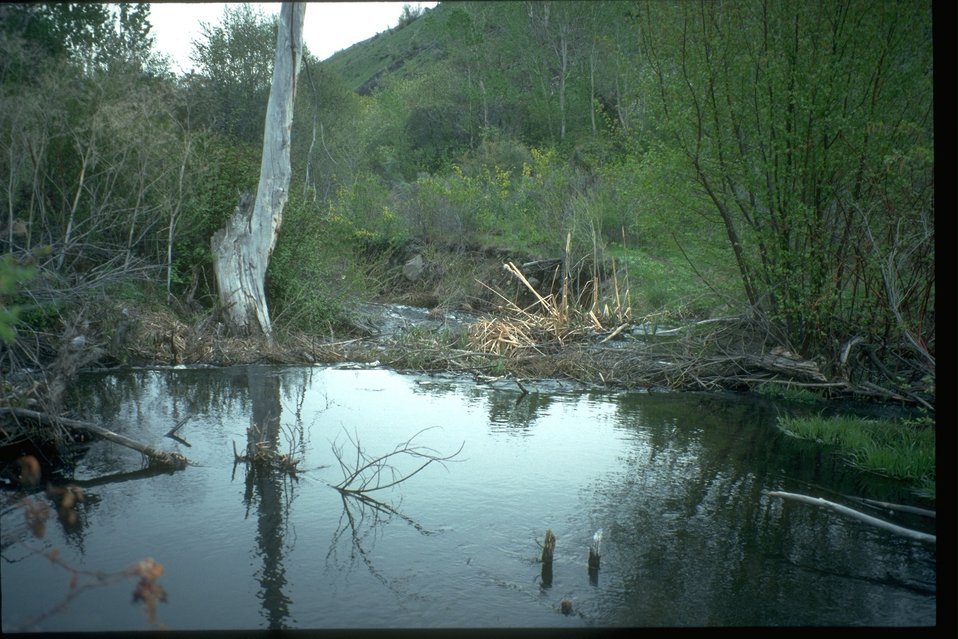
Beaver dam and pool along Douglas Creek in Douglas County, WA.